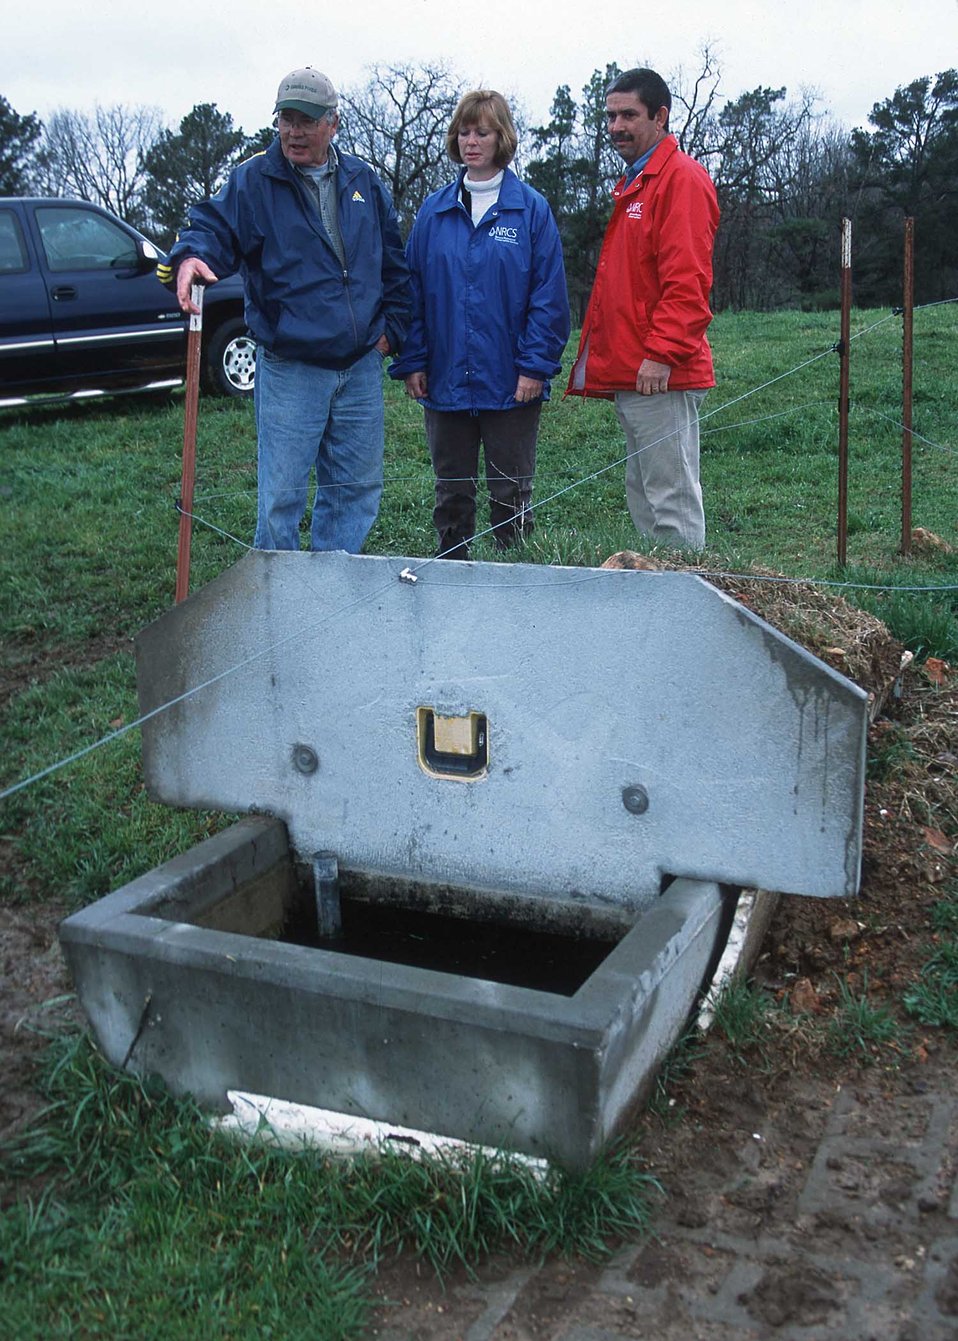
NRCS District Conservationist Rhonda Foster and Grazing Lands Specialist Ralph Horris discuss intensive grazing systems and livestock waterers in Benton, Arkansas.